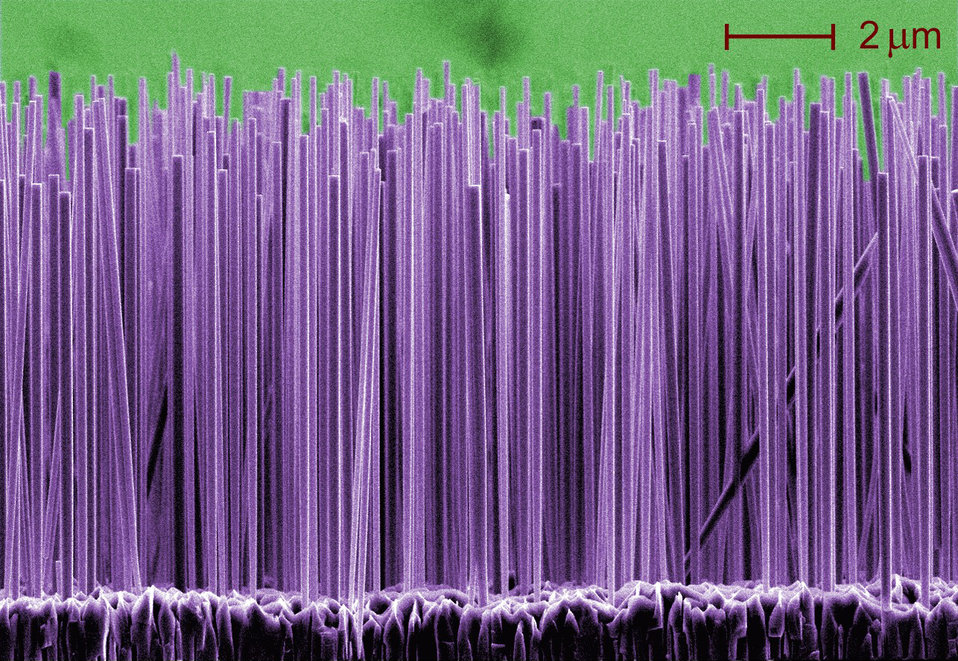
Nanowires that Emit UV Light

NIST 'grows' semiconductor nanowires that emit ultraviolet light as part of a project to make prototype nano-lasers and other devices and the measurement tools needed to characterize them. Electron micrograph shows the gallium nitride wires growing on a silicon substrate (color added for contrast.)